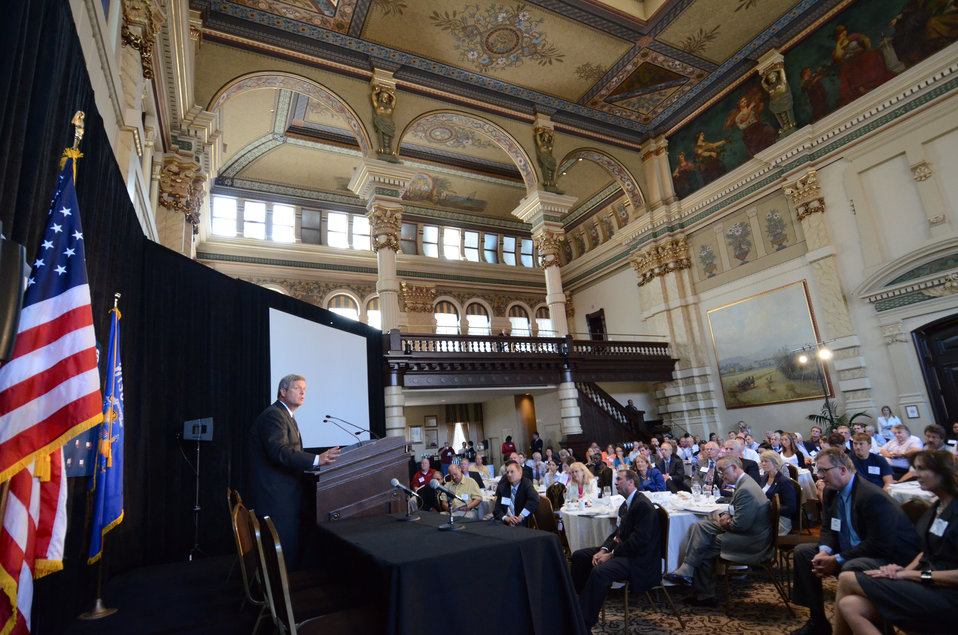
Agriculture Secretary Tom Vilsack speaks at the National Export Initiative (NEI) Small Business Tour in Milwaukee, WI, on Wednesday, August 3, 2011. An important goal of the NEI is to provide additional assistance to small and medium-sized businesses, which are major drivers of job creation. The NEI is assisting small and medium-sized businesses win more foreign government contracts, find buyers worldwide, participate in more trade missions and trade shows, receive more export financing, and learn new ways to sell products and services overseas.